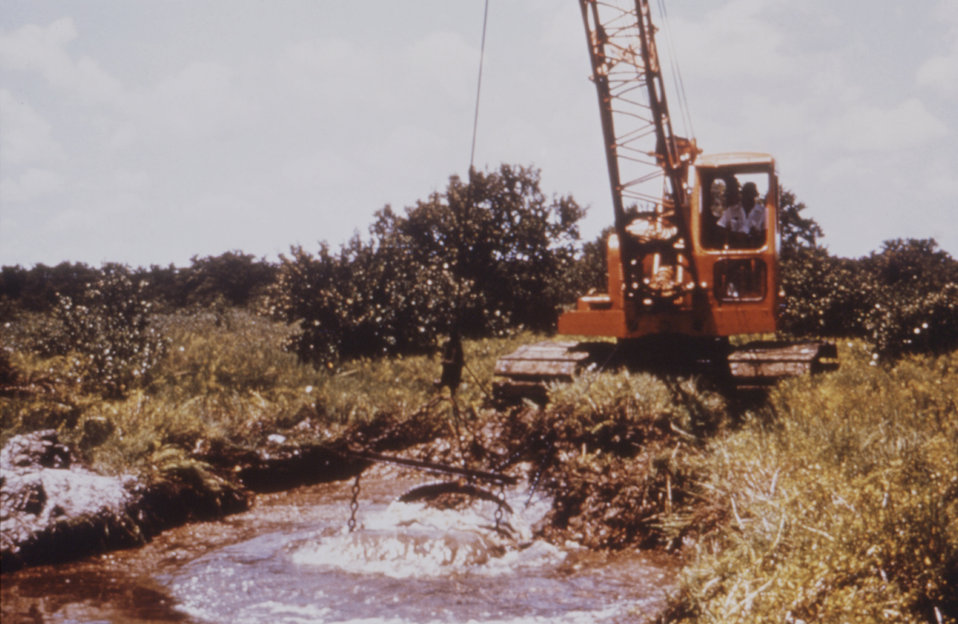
This photograph shows a dragline being used to clear debris from a drainage canal in order to promote unobstructed water flow.